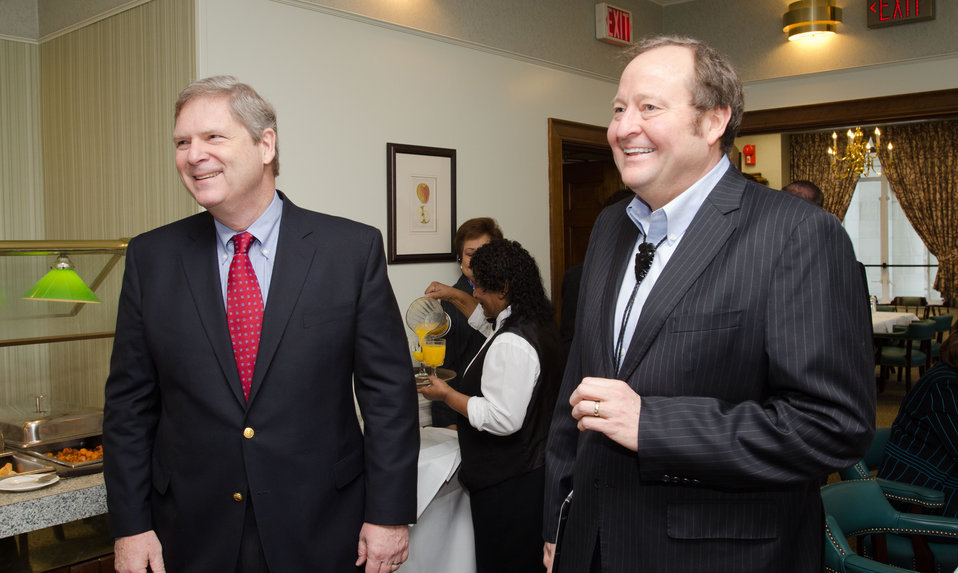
Agriculture Secretary Tom Vilsack with Montana - Governor Brian Schweitzer at a breakfast for Western Governors and Federal Officials, in the Lincoln Room at the United States Department of Agriculture headquarters, in Washington, D.C., on Sunday, February 26, 2012.